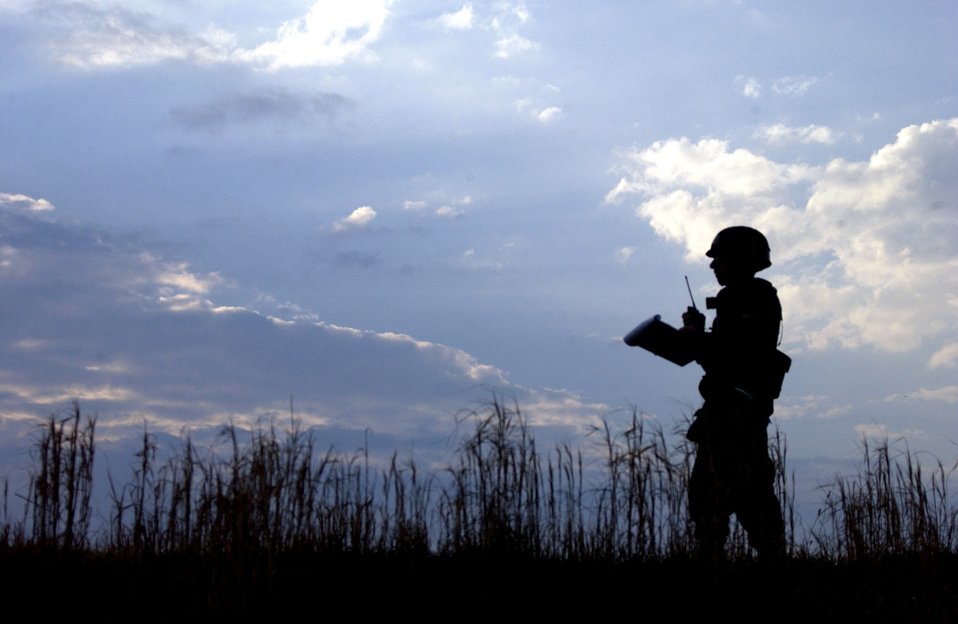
Site survey

CAMP PENDLETON, Calif. (AFPN) -- Maj. Mark Damico conducts a site survey to determine the layout for a new camp site during a joint operational readiness exercise involving the 202nd Red Horse Squadron from Camp Blanding, Fla., and the 203rd Red Horse Squadron from here. Major Damico is with the 203rd RHS.